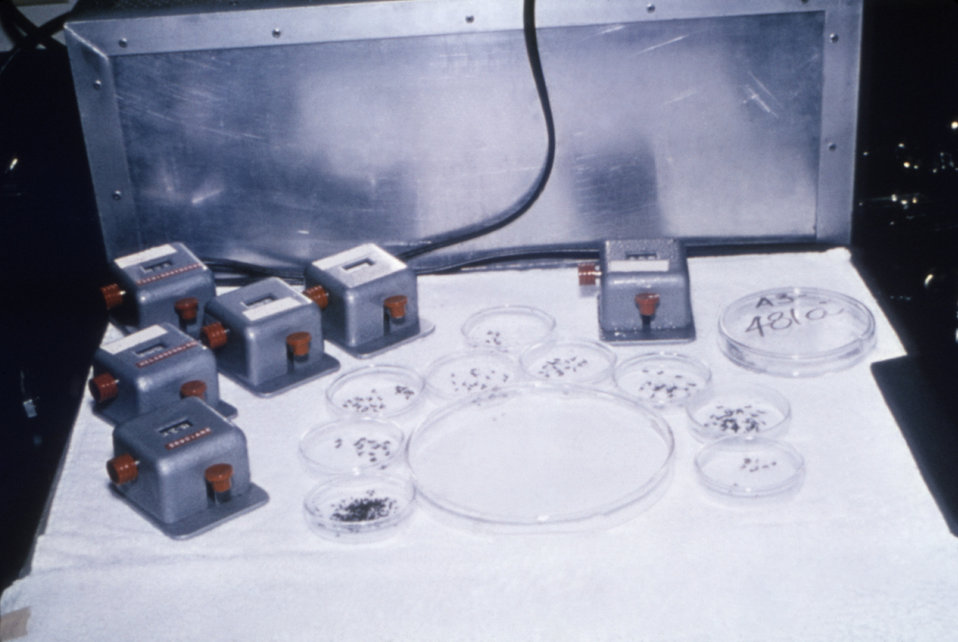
This photograph shows several pools of mosquito species being sorted in Petri dishes.